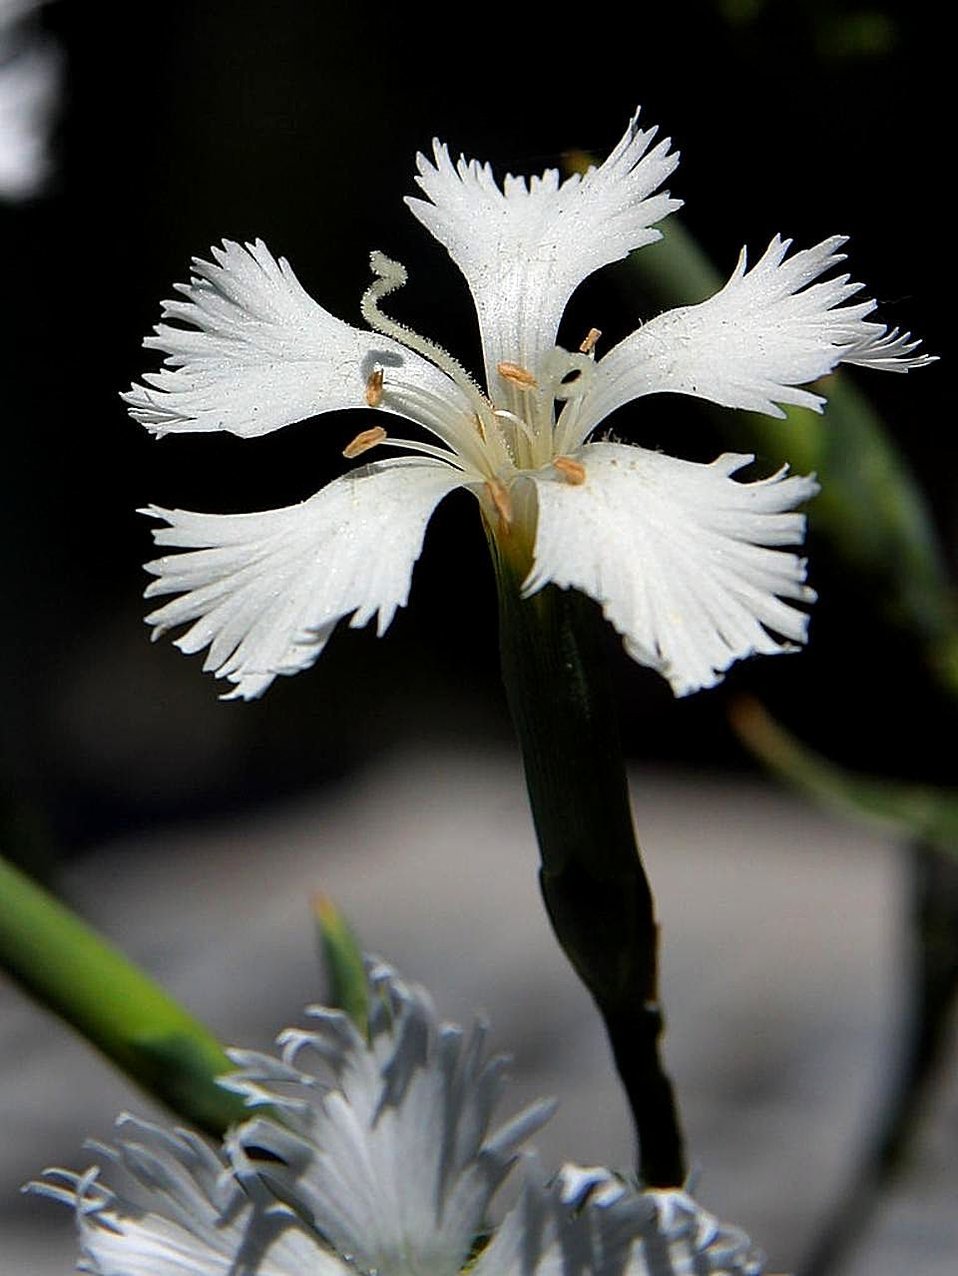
English:
Image title: Beautiful white flower Image from Public domain images website, http://www.public-domain-image.com/full-image/flora-plants-public-domain-images-pictures/flowers-public-domain-images-pictures/beautiful-white-flower.jpg.html